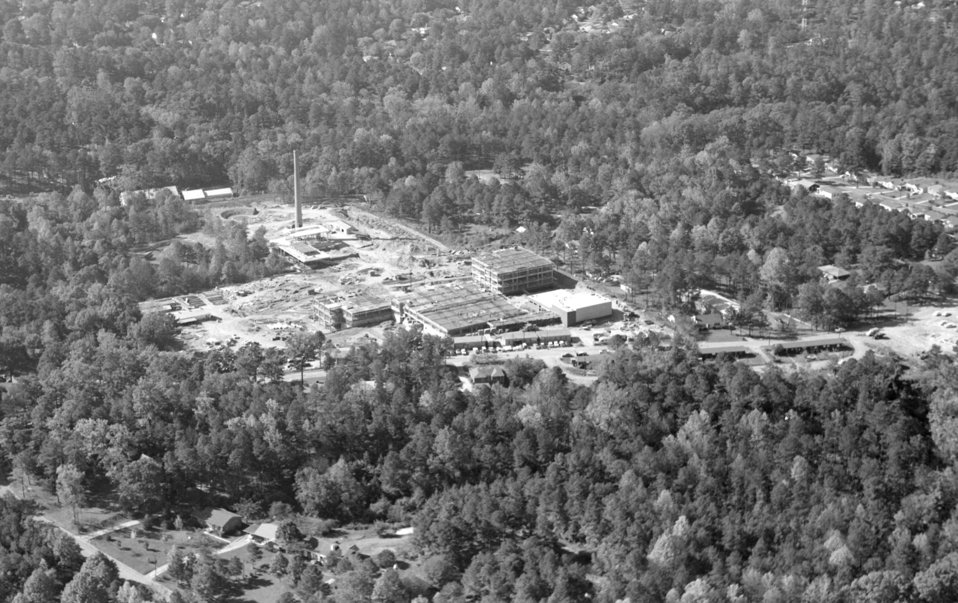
An aerial view of the CDC Clifton Road campus under construction in 1958 (facing southwest).